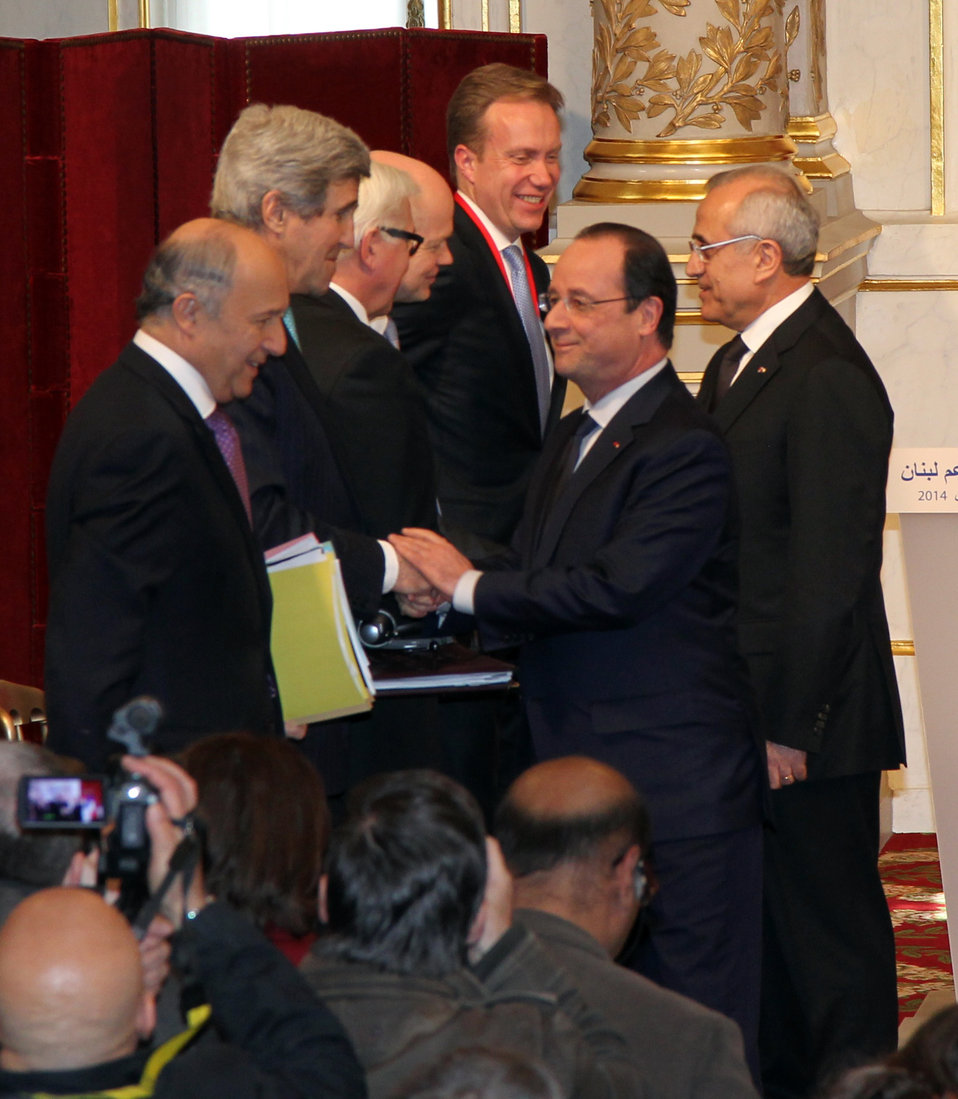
French President Hollande Welcomes Secretary Kerry to Paris

With French Foreign Minister Laurent Fabius looking on, French President François Hollande welcomes U.S. Secretary of State John Kerry to the International Support Group for Lebanon at the Elysée in Paris, France, on March 5, 2014.